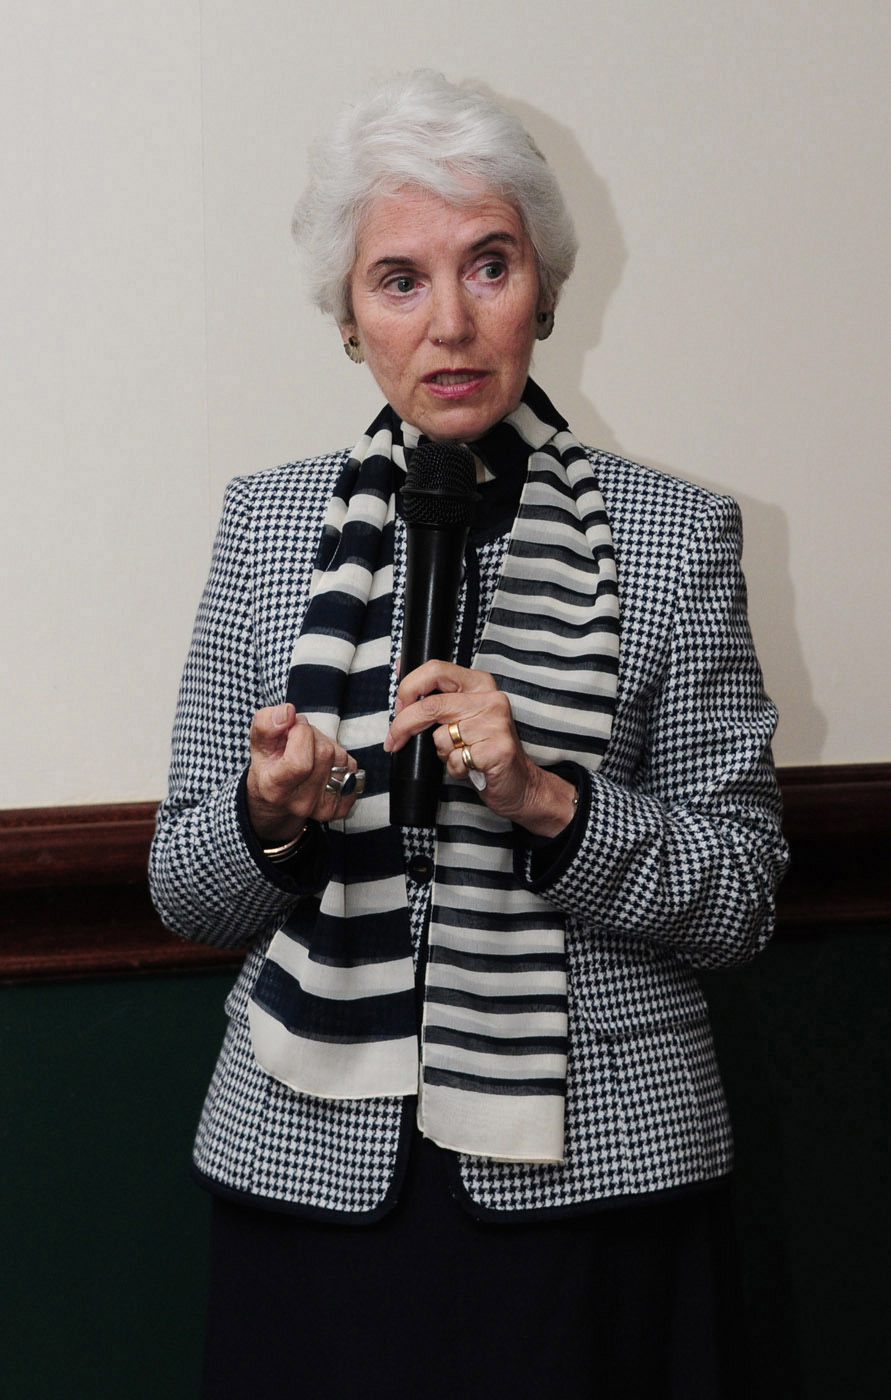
Holocaust survivor shares her mother's story

Eva Clarke, a Holocaust survivor, speaks at the Holocaust Remembrance Week luncheon May 6, 2011, at Royal Air Force Lakenheath, England. She spoke to a packed house of people from RAFs Mildenhall and Lakenheath who had come to listen to her story.